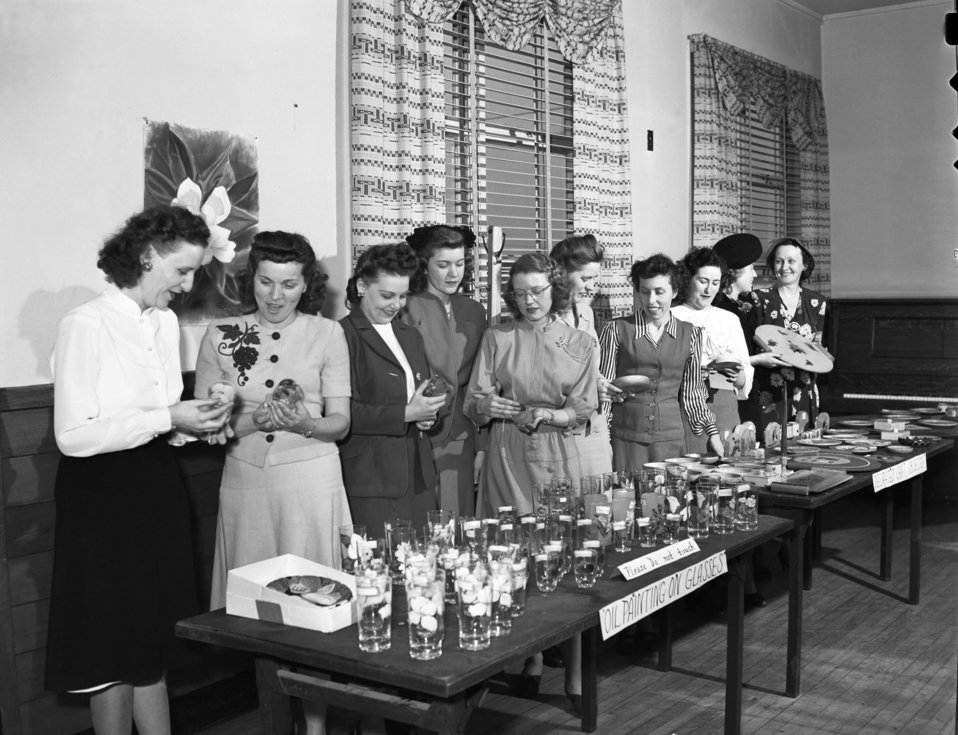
Arts and Crafts Oak Ridge 1947

3296-2 Ed Westcott 2-14-1947 Oak Ridge Tennessee